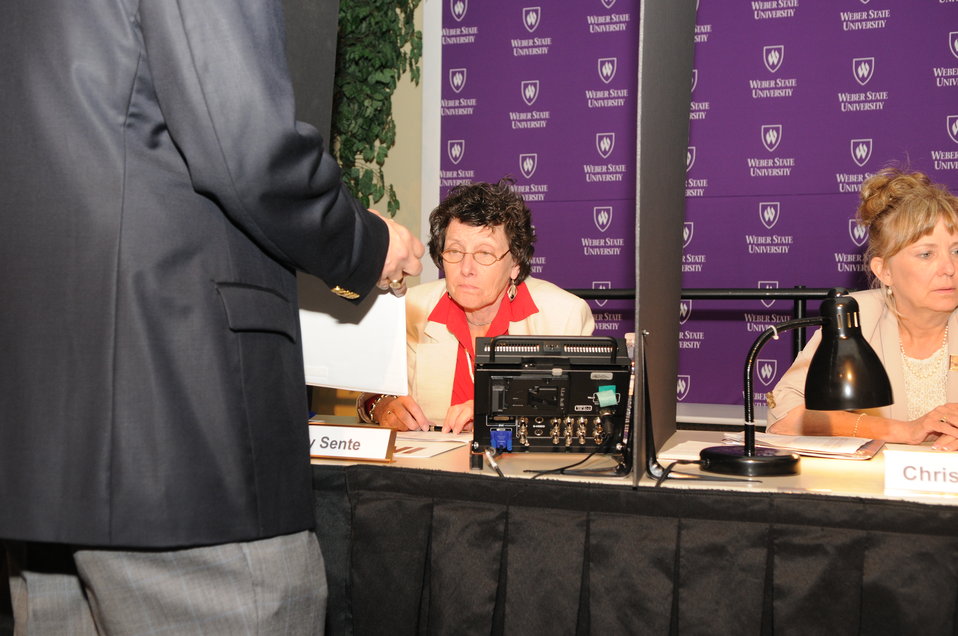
Judging

The U.S. Fish & Wildlife Service sponsored the 2012 Federal Duck Stamp Art Contest September 28 and 29 in Ogden, Utah, at Weber State University. A panel of five judges was responsible for choosing the art work used to design the 2013-2014 Migratory Bird Hunting and Conservation Stamp.